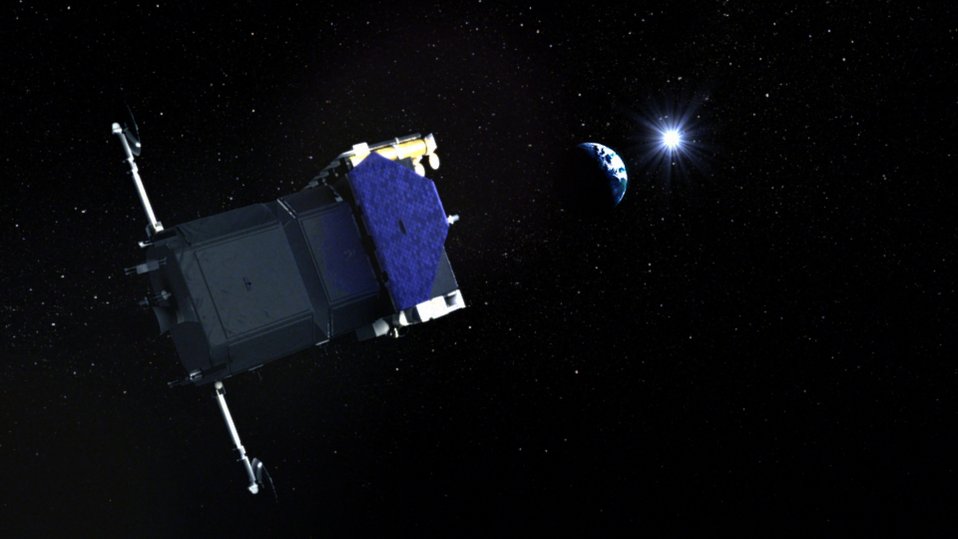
Space Weather Forecasts

With the aim of improving forecasts of space weather NASA's Solar Dynamics Observatory will peer deep inside the sun, to where the solar magnetic field is generated. It also will keep tabs on how energy is released into the solar atmosphere and how the Sun's output of extreme ultraviolet radiation varies.

Credit: NASA, courtesy Ryan Zuber